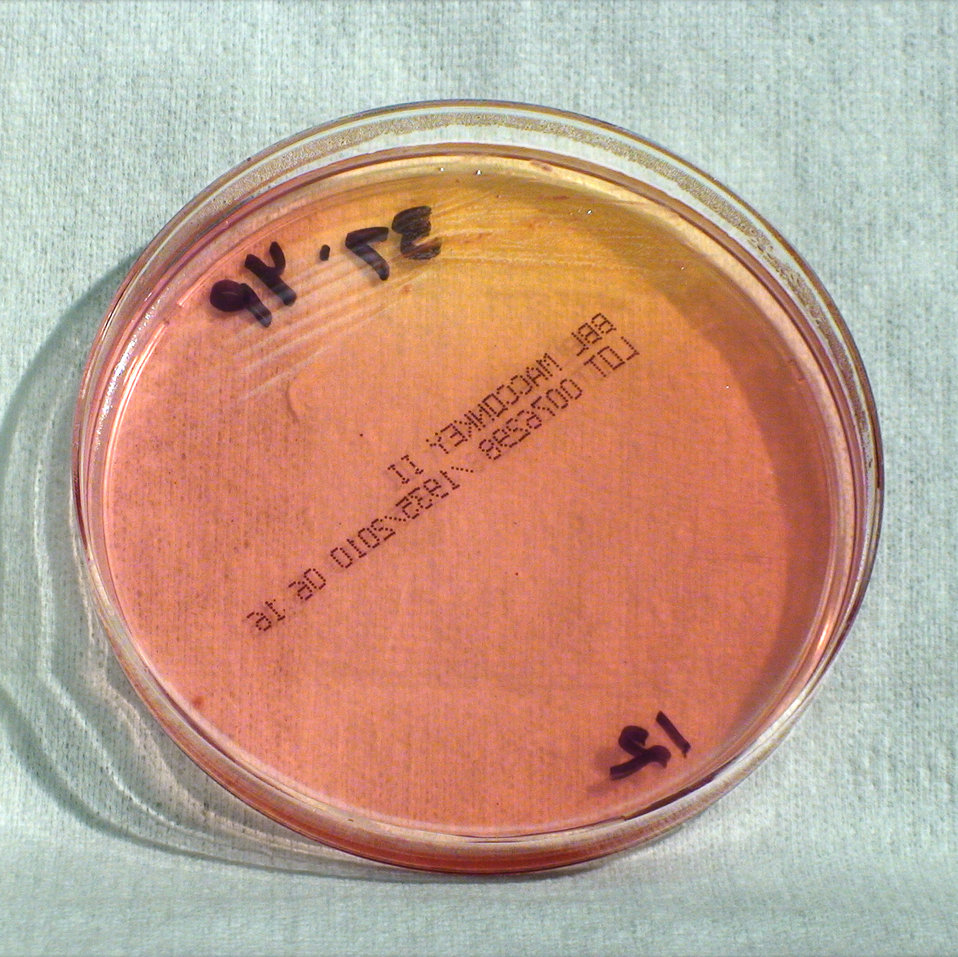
This photograph depicts the colonial morphology displayed by Gram-negative Yersinia pestis bacteria, which was grown on a medium of MacConkey agar, for a 48 hour time period, at a temperature of 37�C. See PHIL 12488, for a closer appearance of Y. pestis bacterial colonies grown on the same medium, and at the same temperature , but for half the time period (24hr). Yersinia pestis is pathogenic towards humans, and is responsible for causing the disease known as plague.